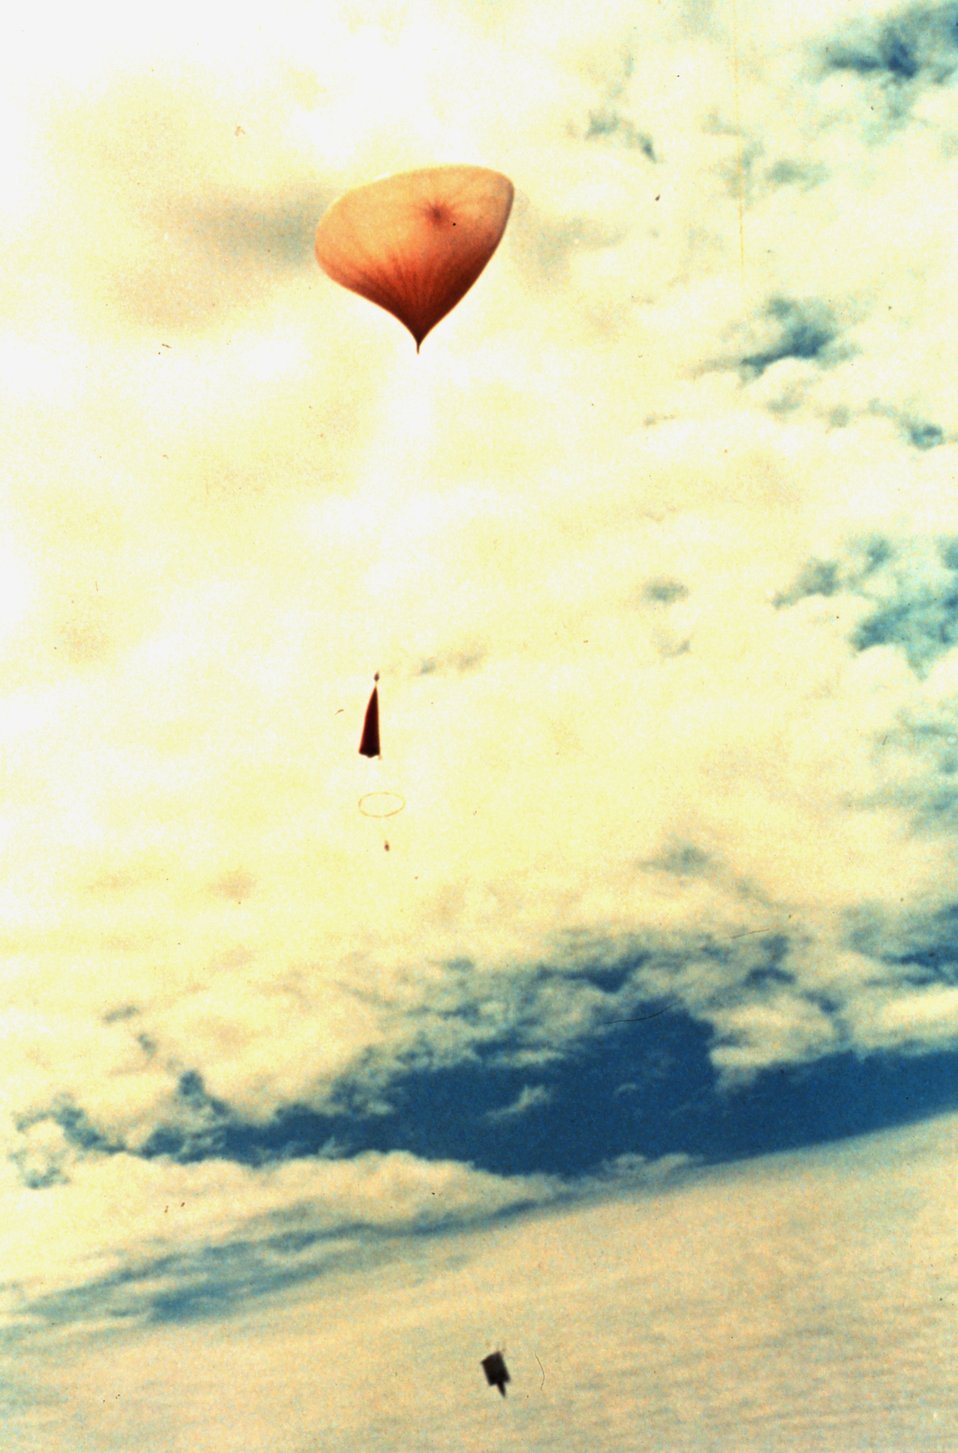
Rawinsonde weather balloon just after launch. Notice a parachute in the center of the string and a small instrument box at the end. After release it measures many parameters. These include temperature, relative humidity, pressure, and wind speed. This information is transmitted back to surface observers.